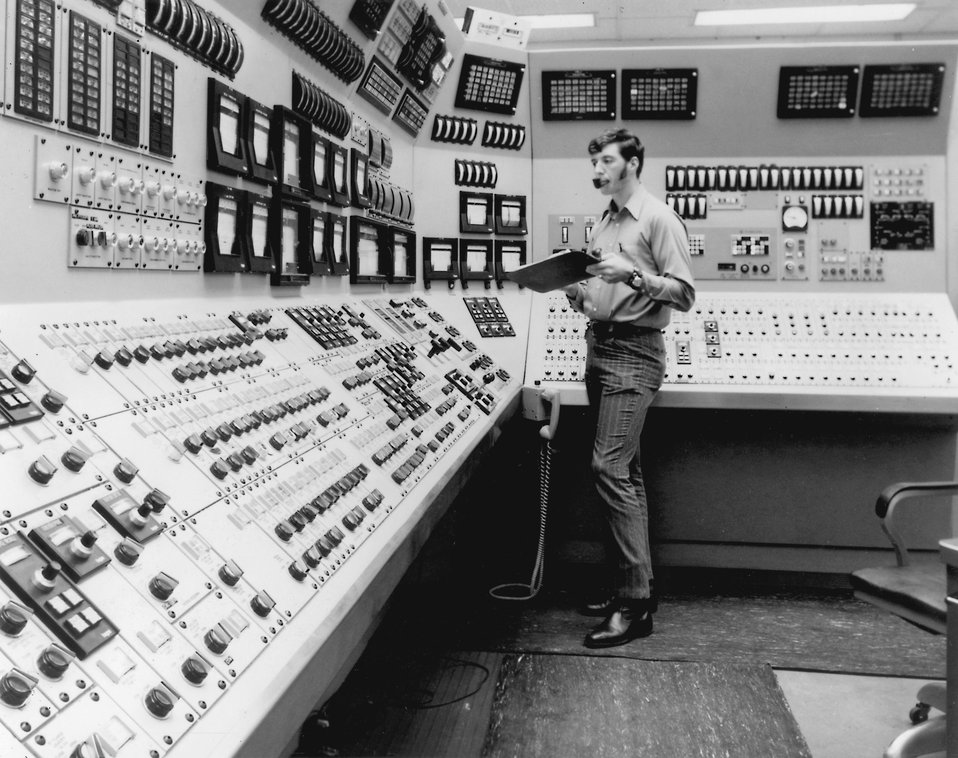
Hartsville, S.C.....H.B. Robinson Steam Electric Plant Unit 2. Nuclear control room. Circa 1973.